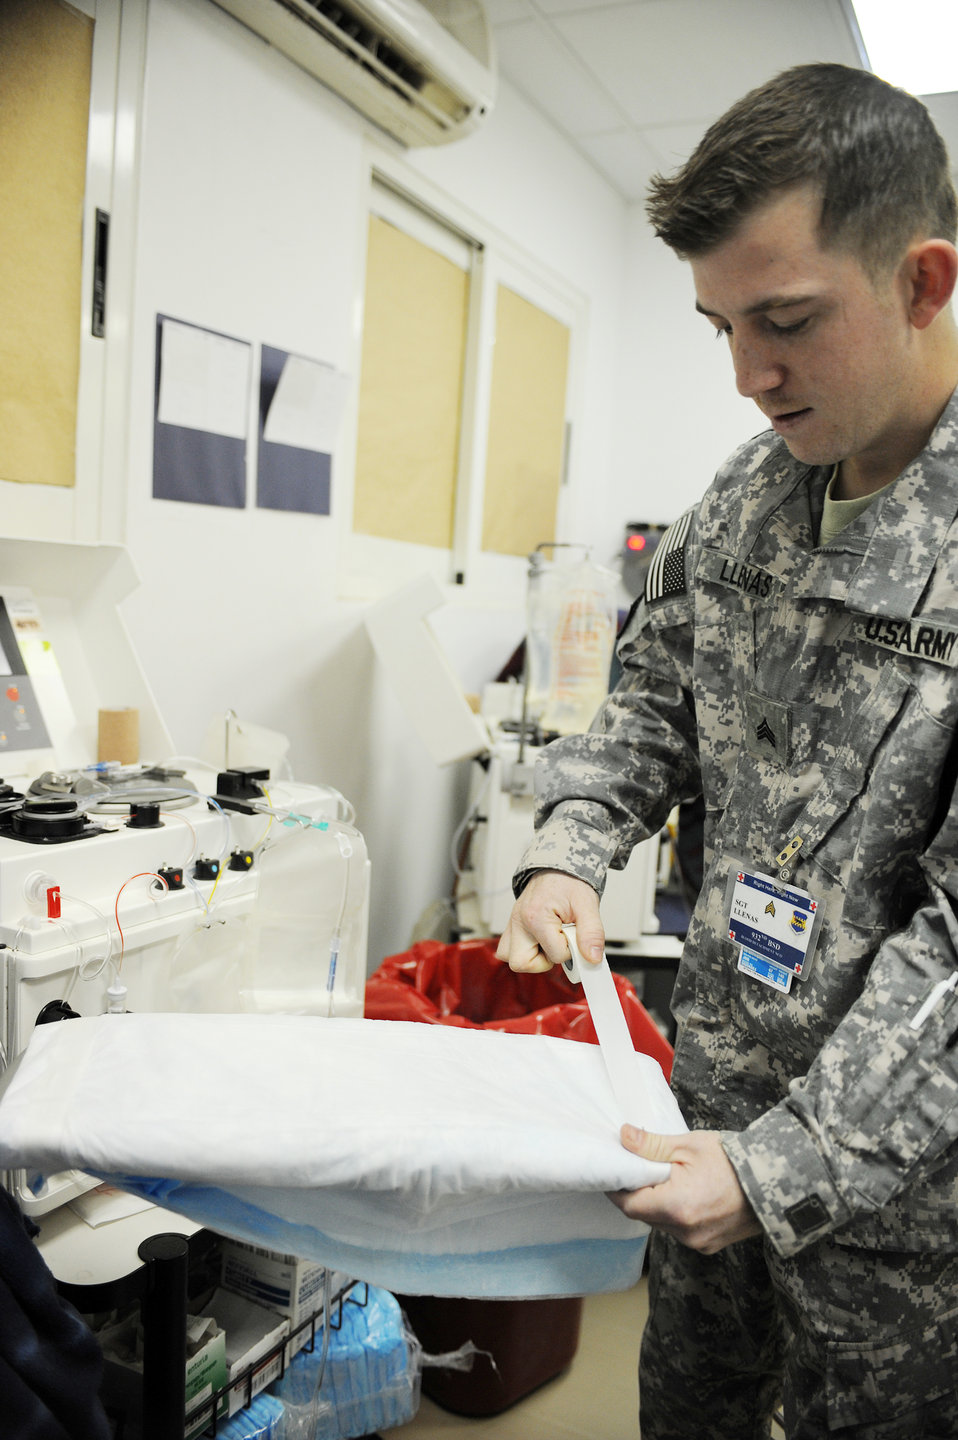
Blood donors are vital

Army Sgt. Daniel Llenas, a lab technician with the 932nd Blood Support Detachment at Joint Base Balad, Iraq, prepares an arm resting table March 4, 2010, for a platelet donor. The technicians use an Apheresis machine that draws the blood, separates the platelets and then returns the blood to the donor. The procedure takes approximately one and a half to two hours. Sergeant Llenas is deployed from Fort Hood, Texas, and is a native of Juneau, Alaska.